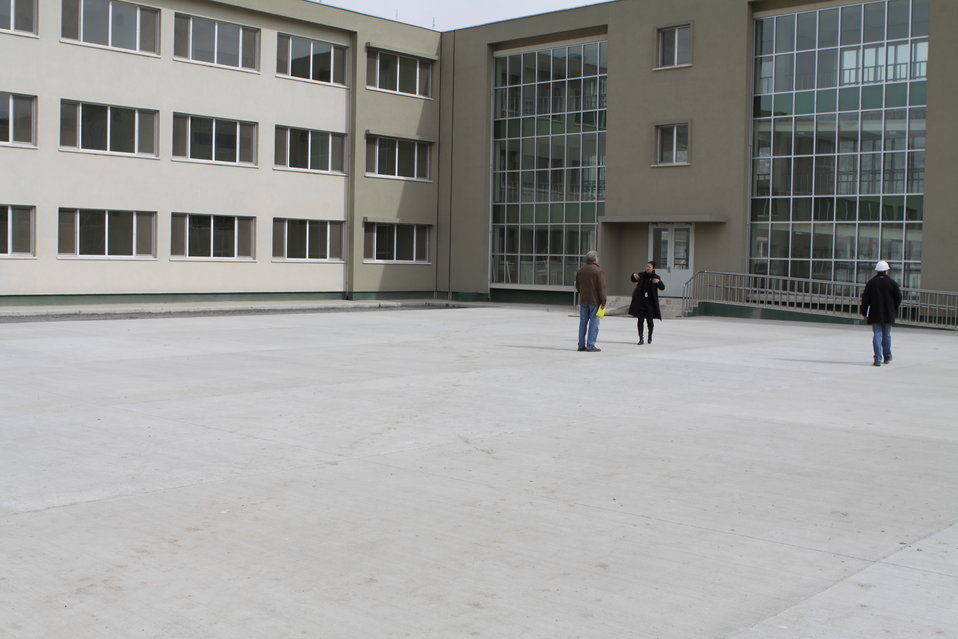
Ghazi high school , Kabul

The Ghazi high school funded through USAID's Kabul School Program